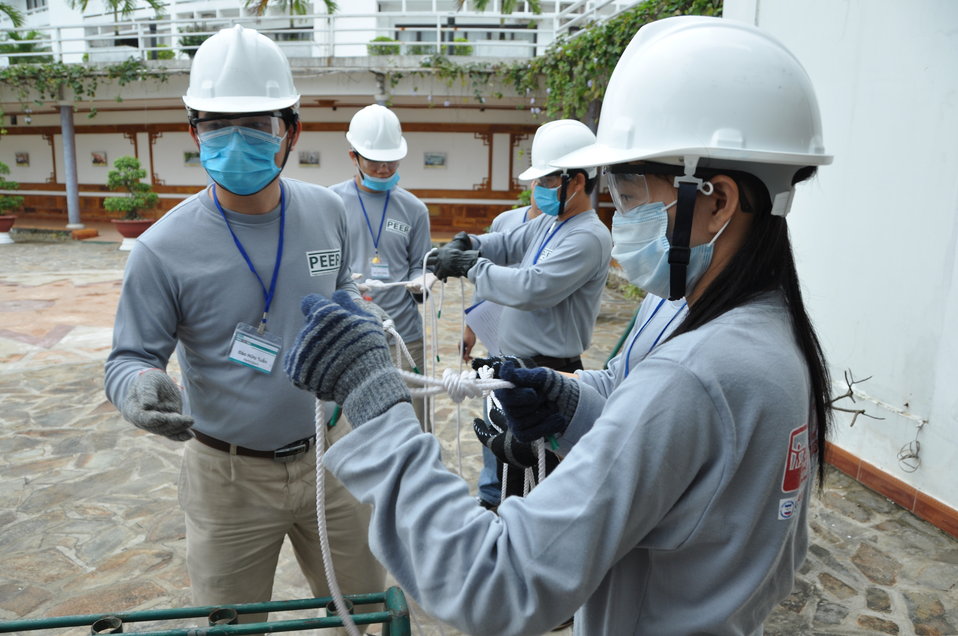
Disaster and Emergency Training Funded by USAID in Hue, Vietnam